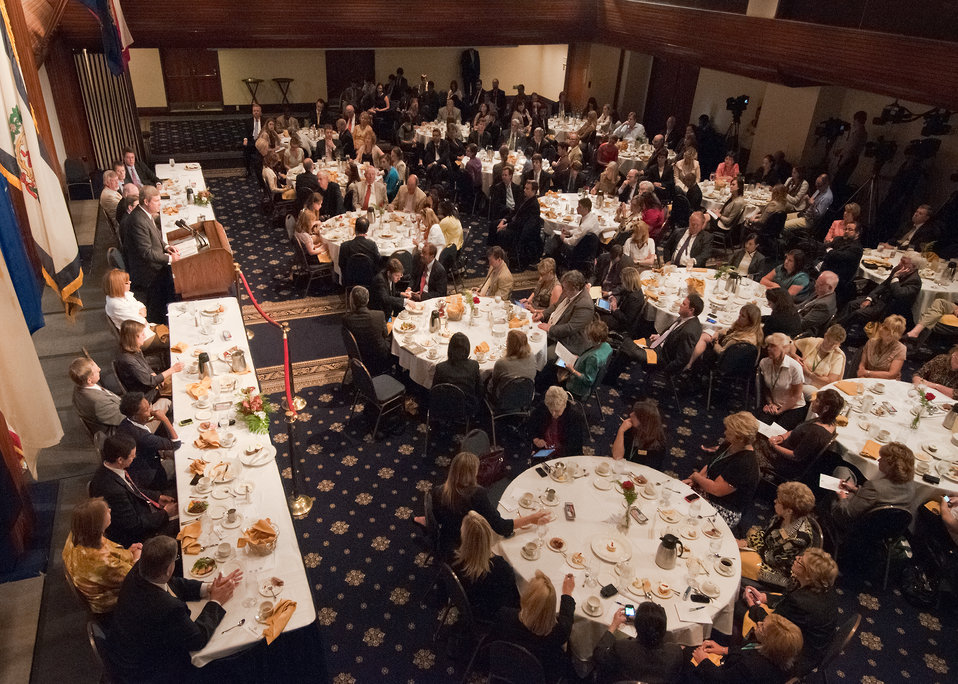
Agriculture Secretary Tom Vilsack spoke to journalists and national agriculture leaders about Innovation in American Agriculture, Sustainable Solutions to Help Feed the World at the National Press Club in Washington, DC, Monday, June 13, 2011 prior to attending the G20 Summit in France with global agriculture leaders. Secretary Vilsack mentioned in his speech, 'As we look to the future, this challenge grows even more stark. The global population is on the rise and strong economic growth in developing countries is expanding middle classes and increasing demand for agricultural products. We will have to increase food production by 70 per cent to feed a larger, richer global population of 9.3 billion by 2050. What's more, agriculture will play a role in meeting the growing demand for energy – which is expected to increase by more than 40% by 2035.”